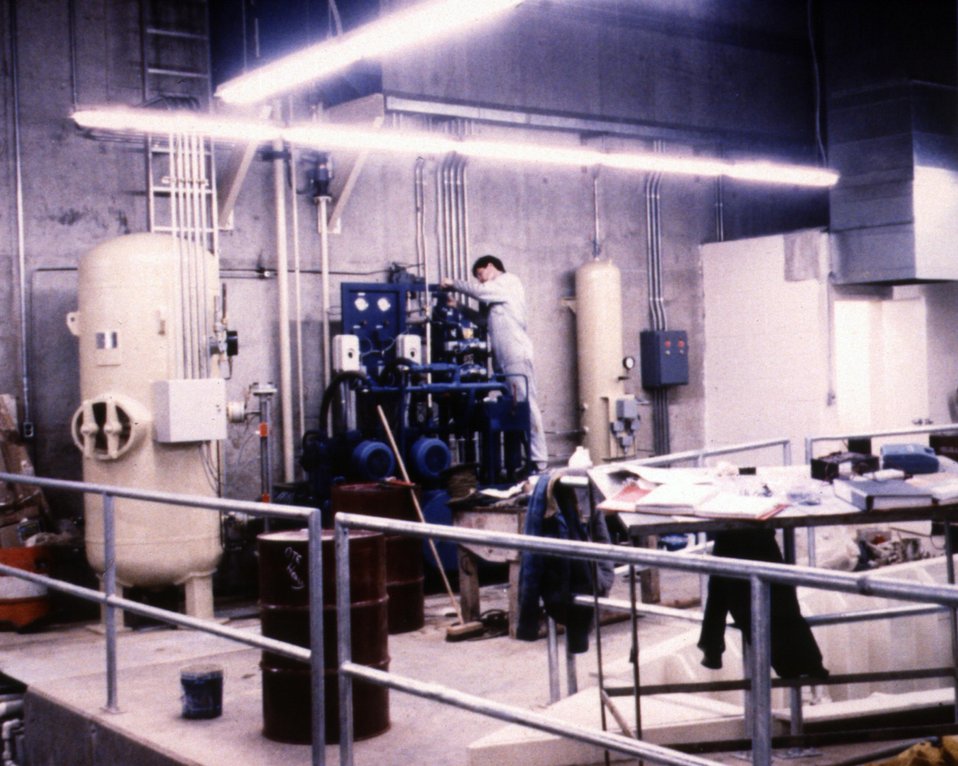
VIEW OF AUXILIARY EQUIPMENT FLOOR.

THE DOE SMALL-SCALE HYDROPOWER PROGRAM CONSISTS OF 19 PROJECTS AND DEMONSTRATES THE VIABILITY OF SMALL-SCALE HYDRO-POWER WITH AVAILABLE TECHNOLOGY. THE BROAD RIVER PROJECT, BEGUN IN JANUARY, 1983, WENT ON LINE DECEMBER 27, 1987. UTILIZING ONE OPEN-PIT TUBULAR TURBINE THAT PRODUCES A MAXIMUM OF 4,140 KILOWATTS, THE DAM PROVIDES A GROSS HEAD OF 20.2 FEET WITH AN ANNUAL STREAM FLOW OF 2,472 CFS.